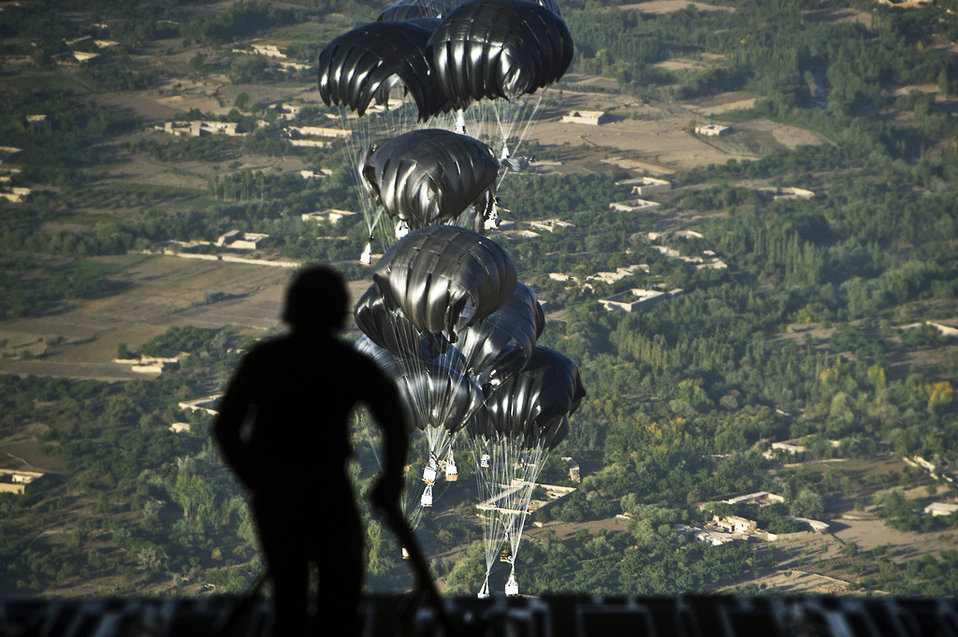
Enlisted Aviators drop supplies

Staff Sgt. Peter Jensen collects straps that restrained airdrop bundles in the back of a C-17 Globemaster III on Sept 30, 2011. Jensen and the crew of the C-17 air dropped 40 bundles to a remote outpost in Afghanistan. Aerial delivery of critical supplies decreases the total number of resupply convoys conducted in high threat areas. Jensen is a loadmaster assigned to the 816th Expeditionary Airlift Squadron.